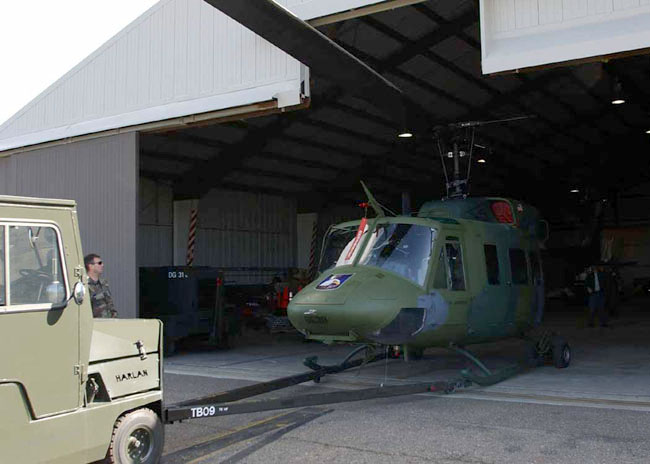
New digs

VANDENBERG AIR FORCE BASE, Calif. -- A helicopter is pushed into the newly modified hangar for the 76th Helicopter Flight. Previously, base officials here rented a 20,000 tent for the aircraft during the annual Guardian Challenge competition.